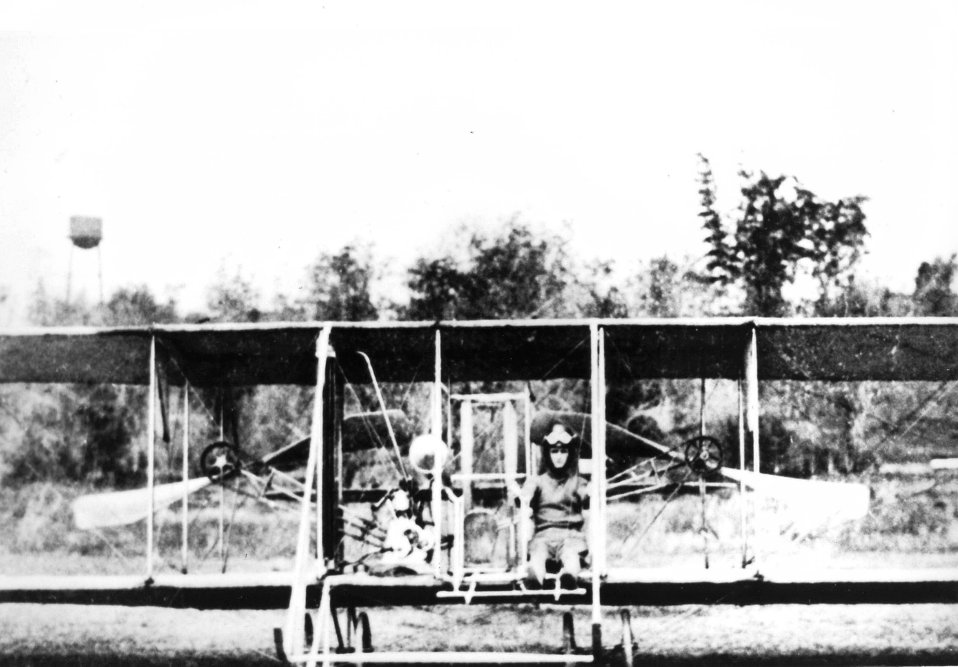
Corporal Vernon L. Burge in Army Wright

EARLY YEARS -- Corporal Vernon L. Burge becomes the first enlisted pilot. Seated in an Army Wright